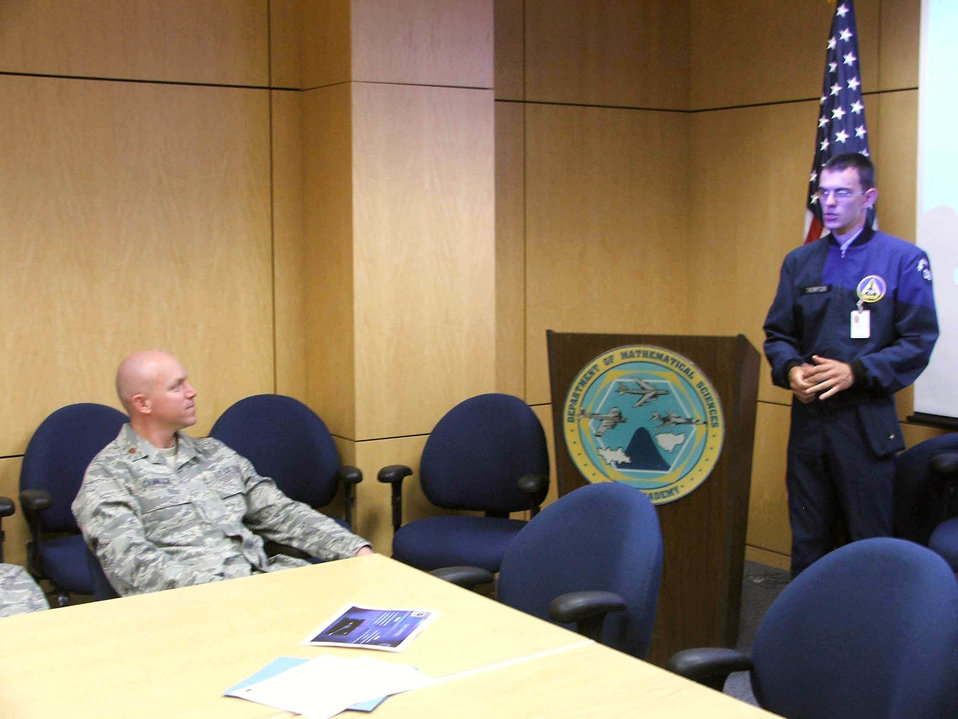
Summer research program

Air Force Academy Cadet First Class Jeremy Thompson briefs Maj. Dan Cammack on the outcome of his wideband global satcom reliability study. Cadet Thompson spent five weeks at the Air Force Operational Test and Evaluation Center's Detachment 4 at Peterson Air Force Base, Colo. He was participating in the AFOTEC Mentoring Program that integrates Academy cadets with operational test teams to work on real-world Air Force projects.